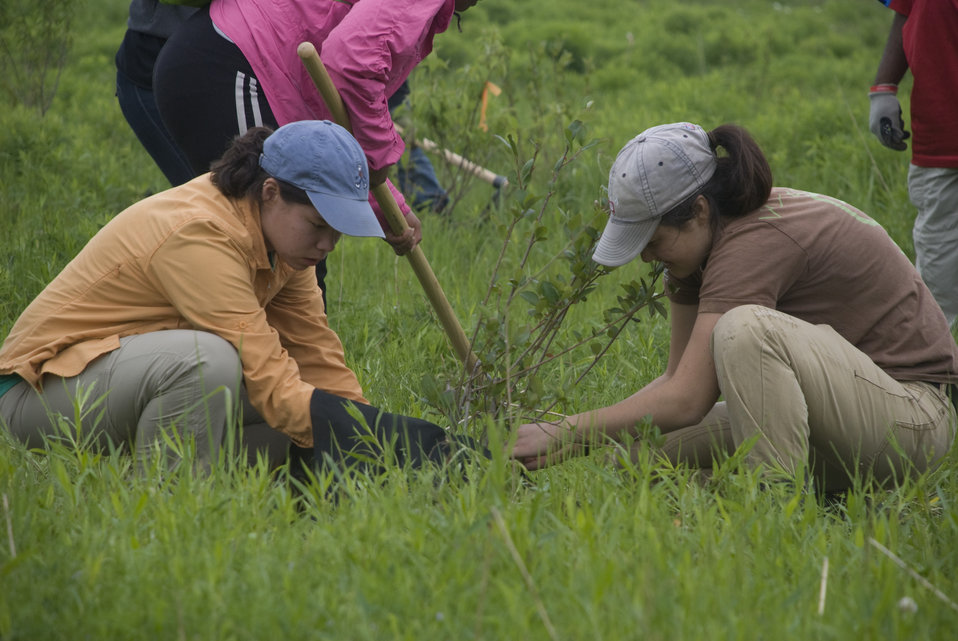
CIP Students planting trees

CIP Interns planting trees for a service project.